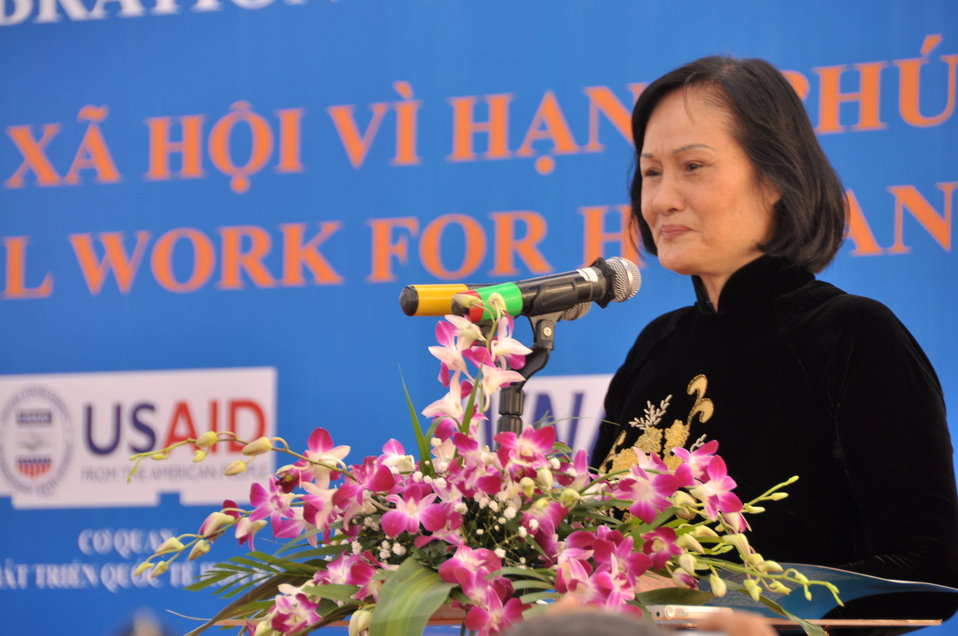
Mdm Nguyễn Thị Hằng, President of Vietnam Vocational Training Association USAID Supports Social Work Education, speaks at the Social Work Day event in Hanoi

Photo: @USAIDVietnam, November 9, 2012